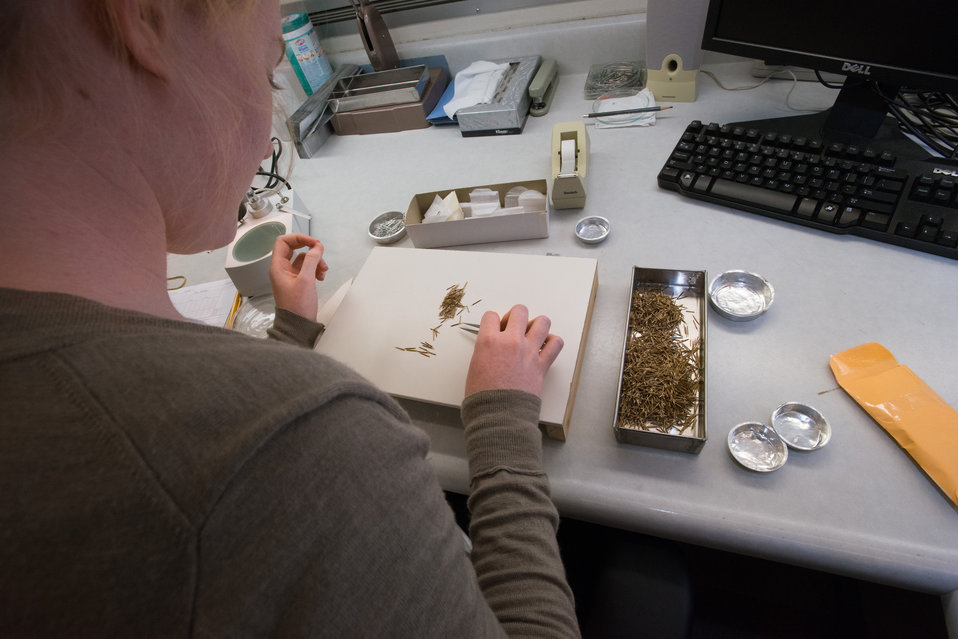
U.S. Department of Agriculture (USDA), Agriculture Research Service (ARS), National Center for Genetic Resources Preservation (NCGRP), Plant and Animal Genetic Resources Preservation Research Unit Student Assistant Courtney R Wilson, performs a seed quality evaluation of Hesperostipa comata, commonly known as needle-and-thread grass, while in the germination bay of the NCGRP, in Ft. Collins, CO, on Wednesday, Nov. 6, 2013.